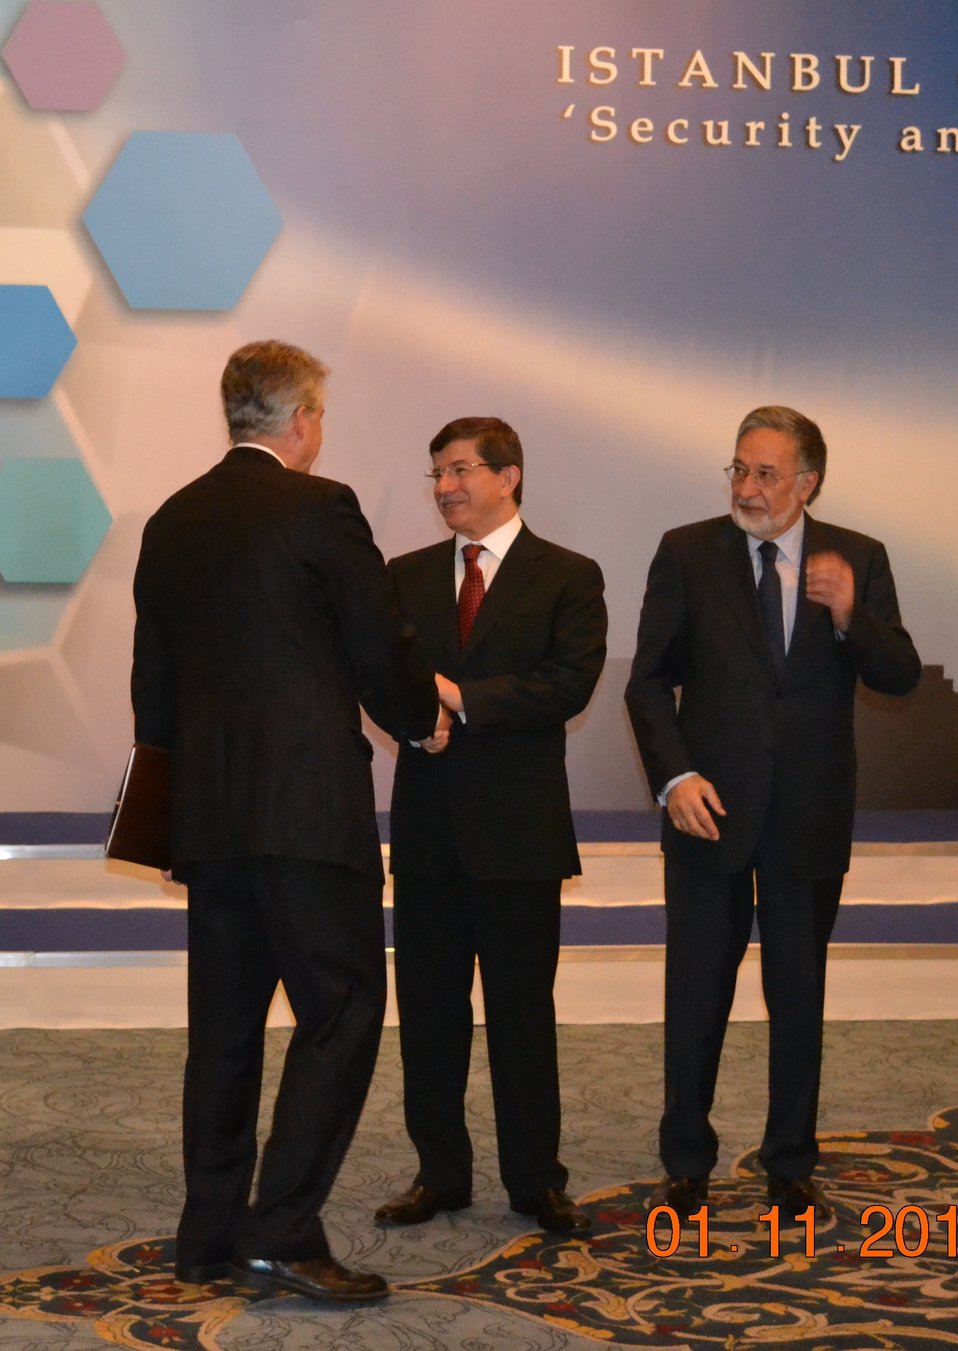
Deputy Secretary Burns Is Welcomed By Turkish Foreign Affairs Minister Davutoglu and Afghan Foreign Minister Rassoul

U.S. Deputy Secretary of State William J. Burns is welcomed by Turkish Foreign Affairs Minister Ahmet Davutoglu and Afghan Foreign Affairs Minister Zalmai Rassoul before the opening session of Istanbul Conference for Afghanistan in Istanbul, Turkey, on November 1, 2011.